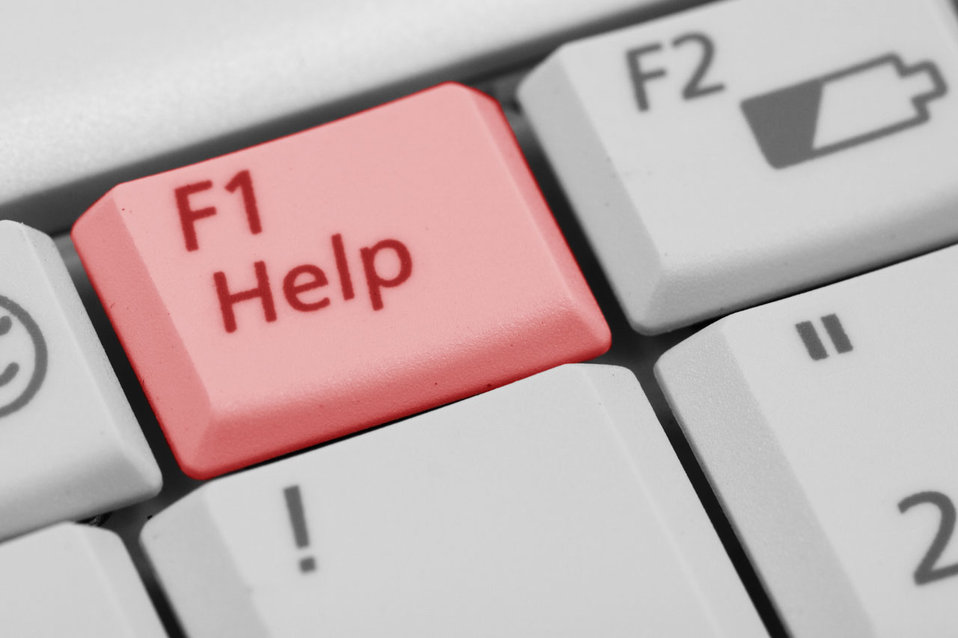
Help key

Red f1 help key on keyboard.